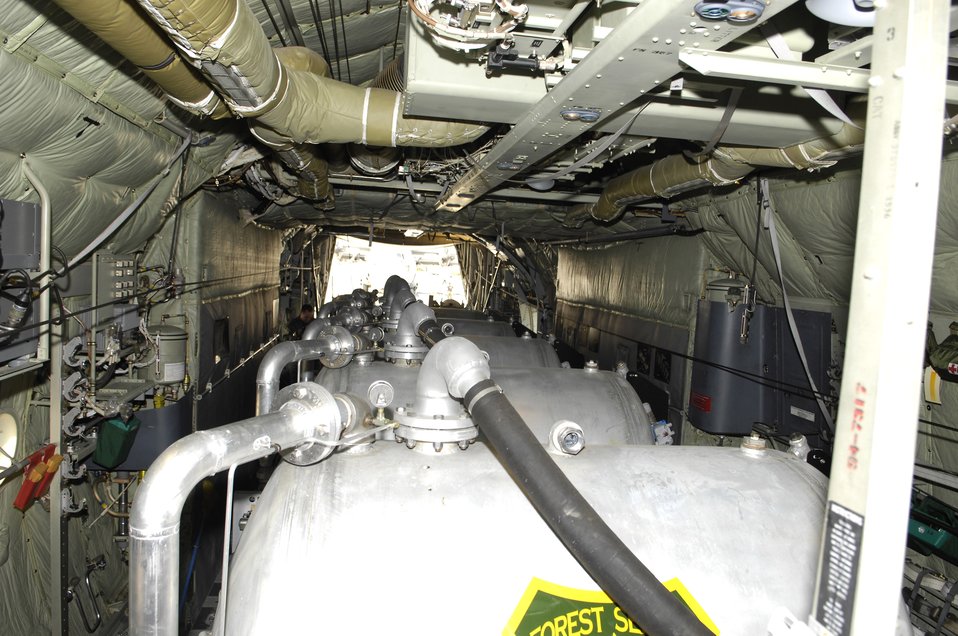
Guard, Reserve aid in California firefighting efforts

Inside a C-130 Hercules, a Modular Air Fire Fighting System is in place to help support firefighting efforts of the Southern California wildfires Oct. 25 at Channel Islands Air National Guard Base, Calif. Air Force Reserve Command and Air National Guard Airmen are participating in the Southern California firefighting effort.